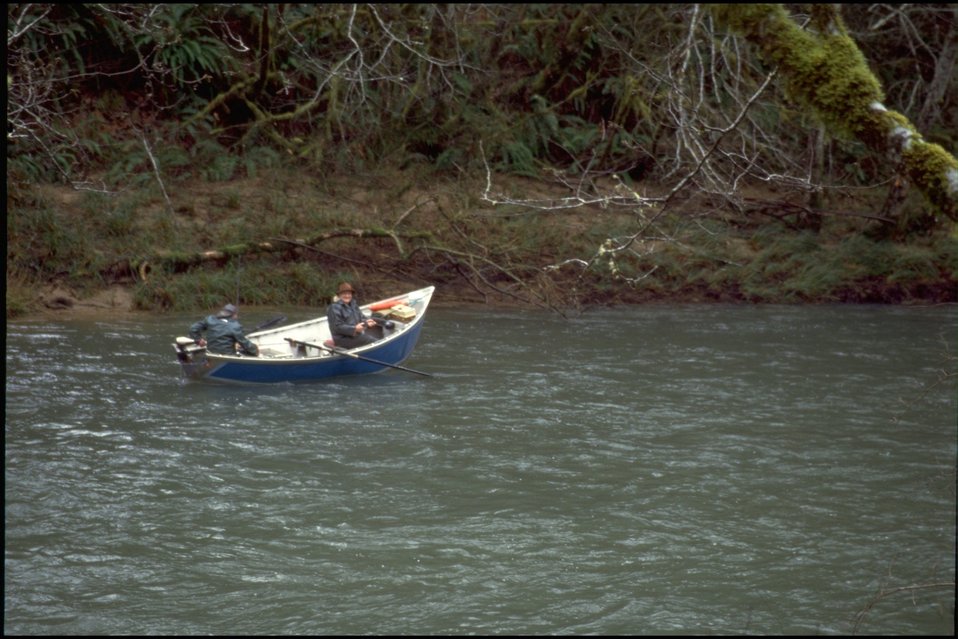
Fishermen on Siuslaw River.